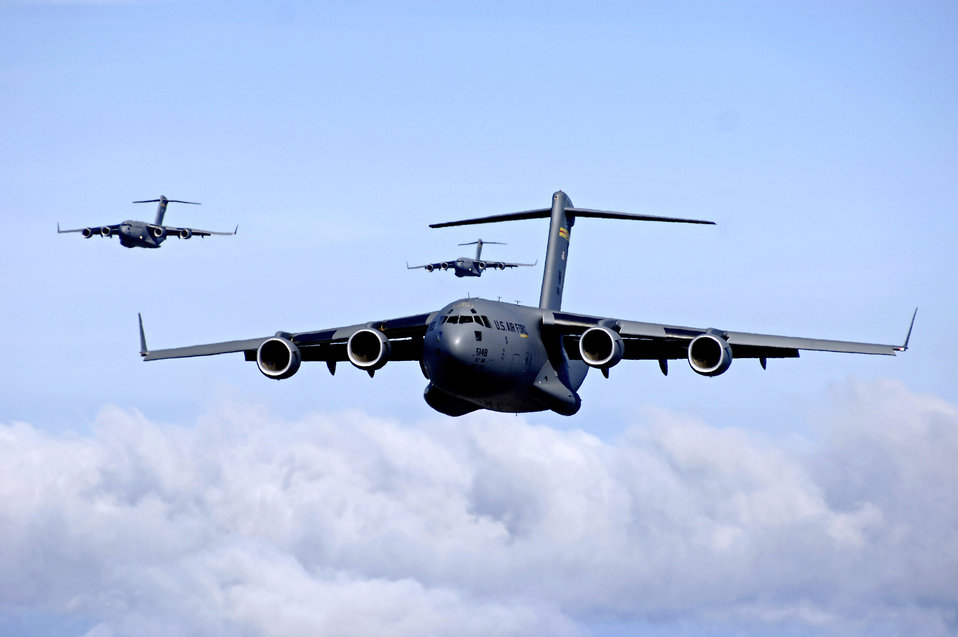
Agility and flexibility: Key components of airpower teamwork

C-17 Globemaster IIIs provide intra-theater heavy airlift support, helping to sustain operations throughout Afghanistan, Iraq and the Horn of Africa.